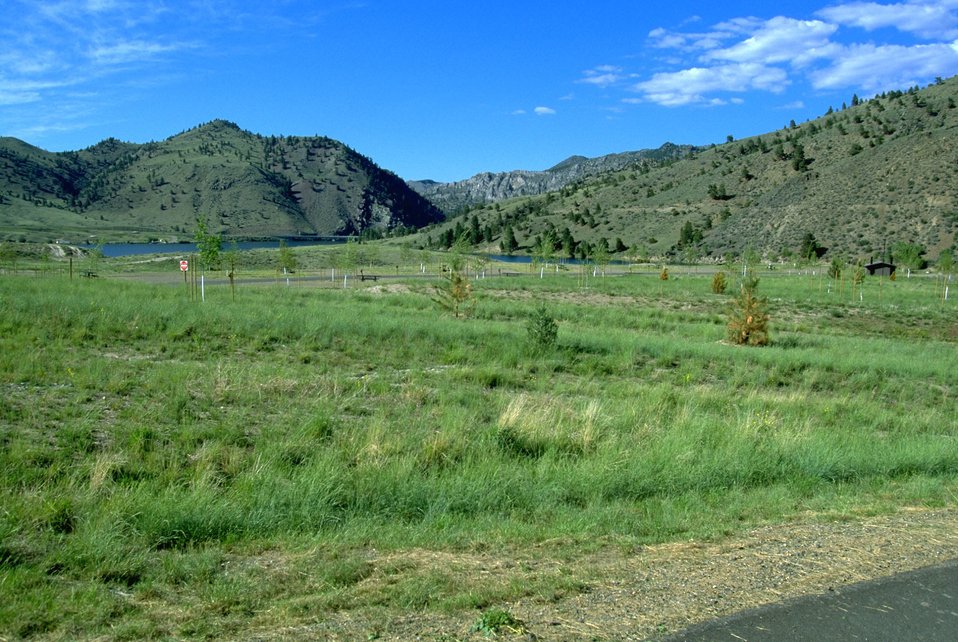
Campsites at Devils Elbow Campground